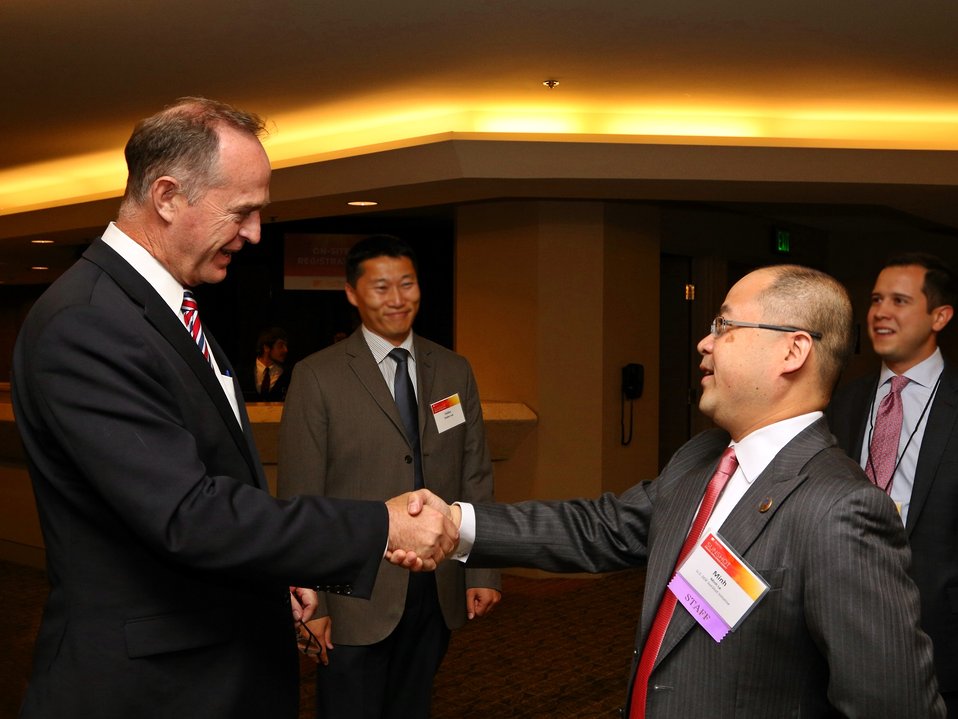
Opening Session 1

Anaheim Mayor Tom Tait with SunShot Director Minh Le.